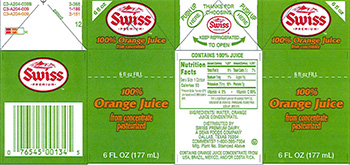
RECALLED – Orange Juice

March 3, 2014 – Product Recall – Lehigh Valley Dairy Conducts Voluntary Recall of Lehigh Valley, Swiss Premium, and Price Chopper Brand Orange Juice Because It May Contain Undeclared Allergen (Milk).